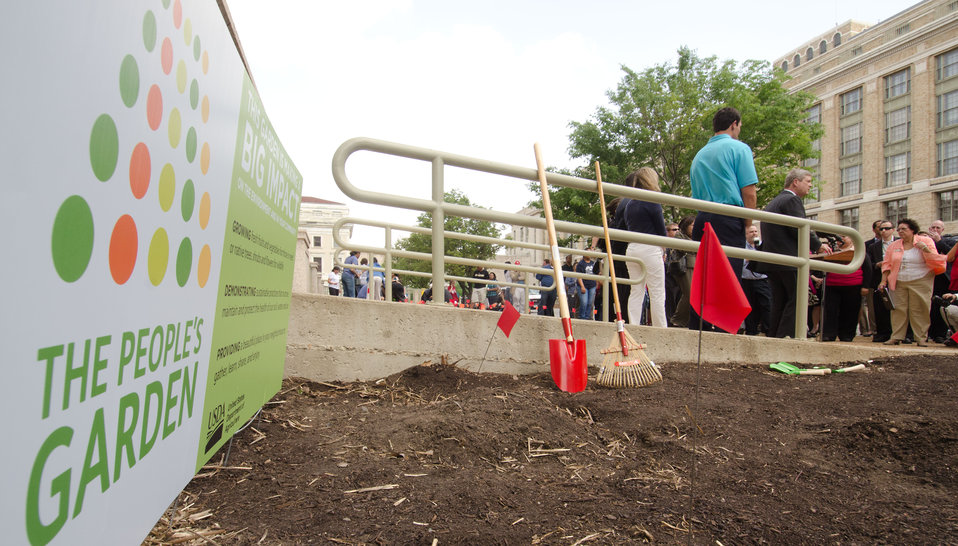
Agriculture Secretary Tom Vilsack (at podium) and St. Louis Rams Quarterback Sam Bradford (blue shirt) met at the U.S. Department of Agriculture to encourage Native American Youth to pursue a healthy lifestyle on Wednesday, April 27, 20ll in Washington, DC. More than 30 Students from Eastern and Western Tribes, Southeast Alaska, and Tuba City, Arizona came to the Nation’s Capitol to plant vegetable seeds that are indigenous to North America. Bradford is a citizen of the Cherokee Nation. The garden is called The Roots of American Agriculture, and is part of the Headquarters’ People’s Garden. Also speaking at the event was the Executive Director of First Lady Michelle Obama’s Let’s Move! Campaign Robin Schepper (blue blouse); Director of the Bureau of Indian Education, and Janie Hipp (striped blouse), Senior Advisor to Secretary Vilsack with the USDA Office of Tribal Relations.